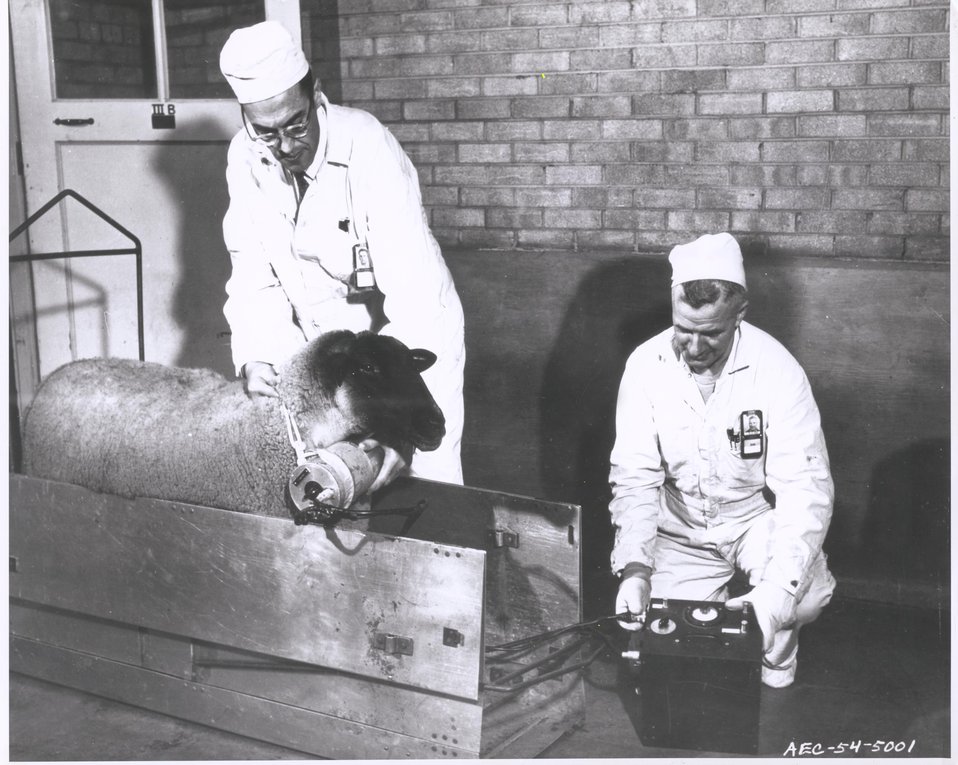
Hanford, Washington...A Hanford Works sheep gets its thyroid checked with an ionization chamber to measure the amount of radioiodine it has retained after being fed with radio-activated food. c. 1954